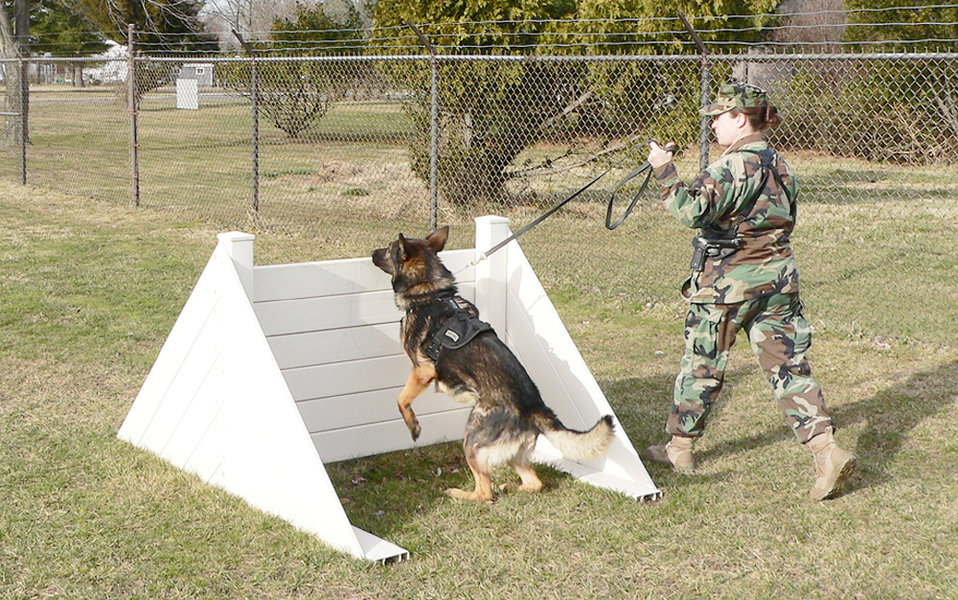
A dog's life at McGuire

Navy Petty Officer 2nd Class Ashley Bidon, a dog handler at Joint Base McGuire-Dix-Lakehurst, N.J., guides her dog over an obstacle on the training course at the base kennel Jan. 5, 2010. The dogs, usually German Shepherds or Belgian Malinois, are selected for military working dog duty based on traits such as intelligence and energy.